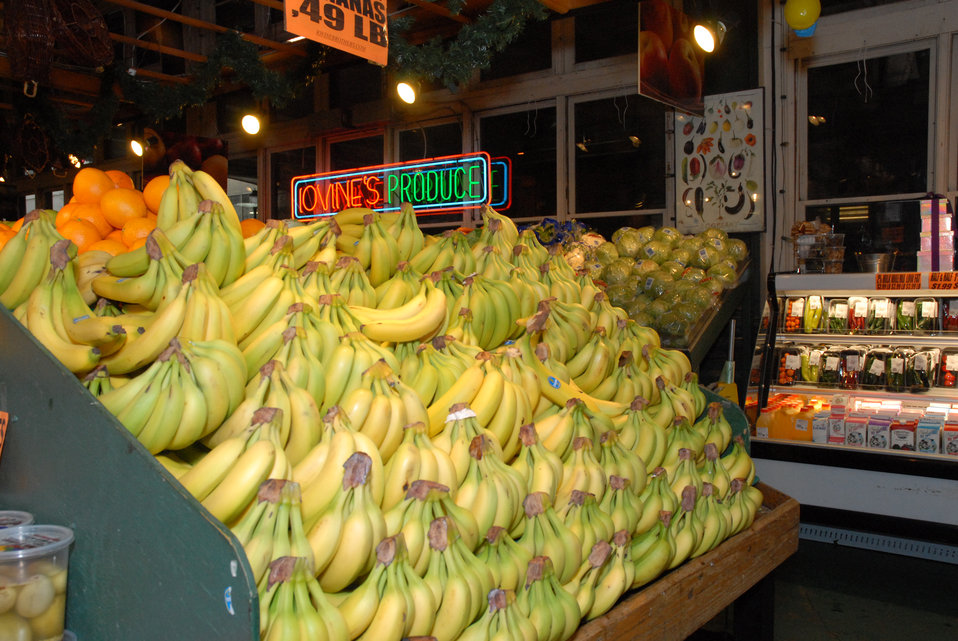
The Reading Terminal Market offers produce fresh from the field to the people of Philadelphia, Pennsylvania on March 26, 2007. There are Amish specialties, fruits, vegetables, meats, seafood, and poultry. Reading Terminal Market opened for business in 1892 with approximately 78,000 square feet and almost 800 spaces for vendors. The Market was revitalized in the 1990’s and today is still the gastronomic bazaar that its original planners had envisioned. Many of the historic Market stands survived the reconstruction and are once again filled with local produce, fresh eggs, milk, meats, poultry, seafood, handmade crafts, jewelry, and clothing. The Market is home to more than 80 merchants, two of whom are descendants of the original stand holders from a century before.